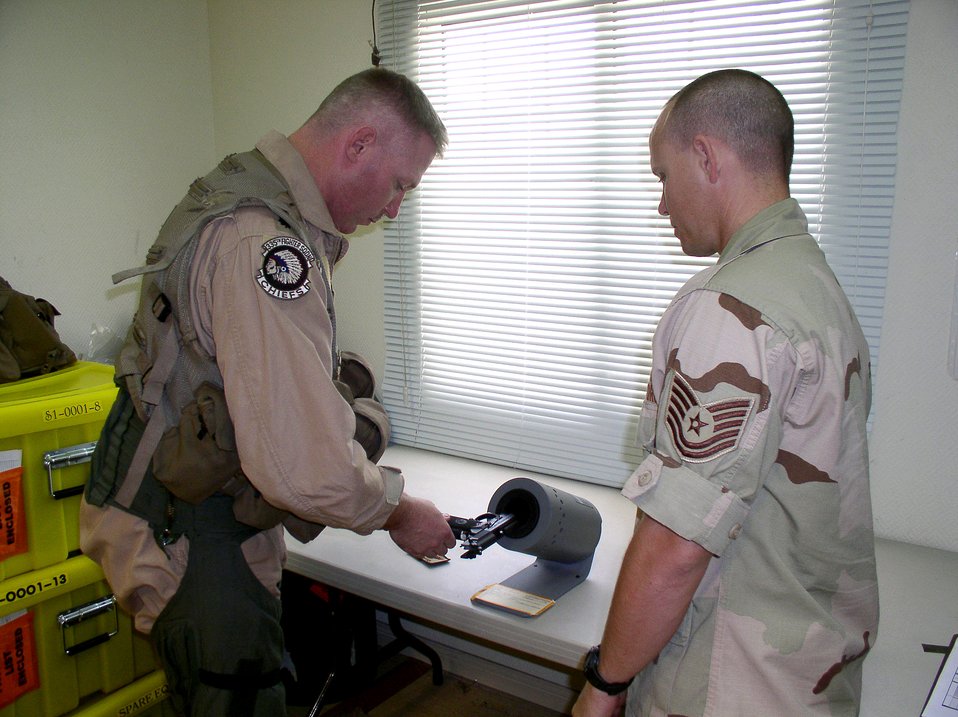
Aircrew support

Life support specialist Tech. Sgt. Theodore Angel watches as Lt. Col. Mark Wiser, an F-15 Eagle pilot, loads his M-9 pistol before leaving for a combat mission on Saturday, July 1. Colonel Wiser and Sergeant Angel are deployed to the 335th Expeditionary Fighter Squadron in Southwest Asia from Seymour Johnson Air Force Base, N.C.